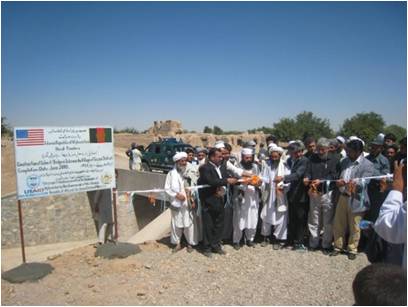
New Bridge to Provide Road Access for Thousands